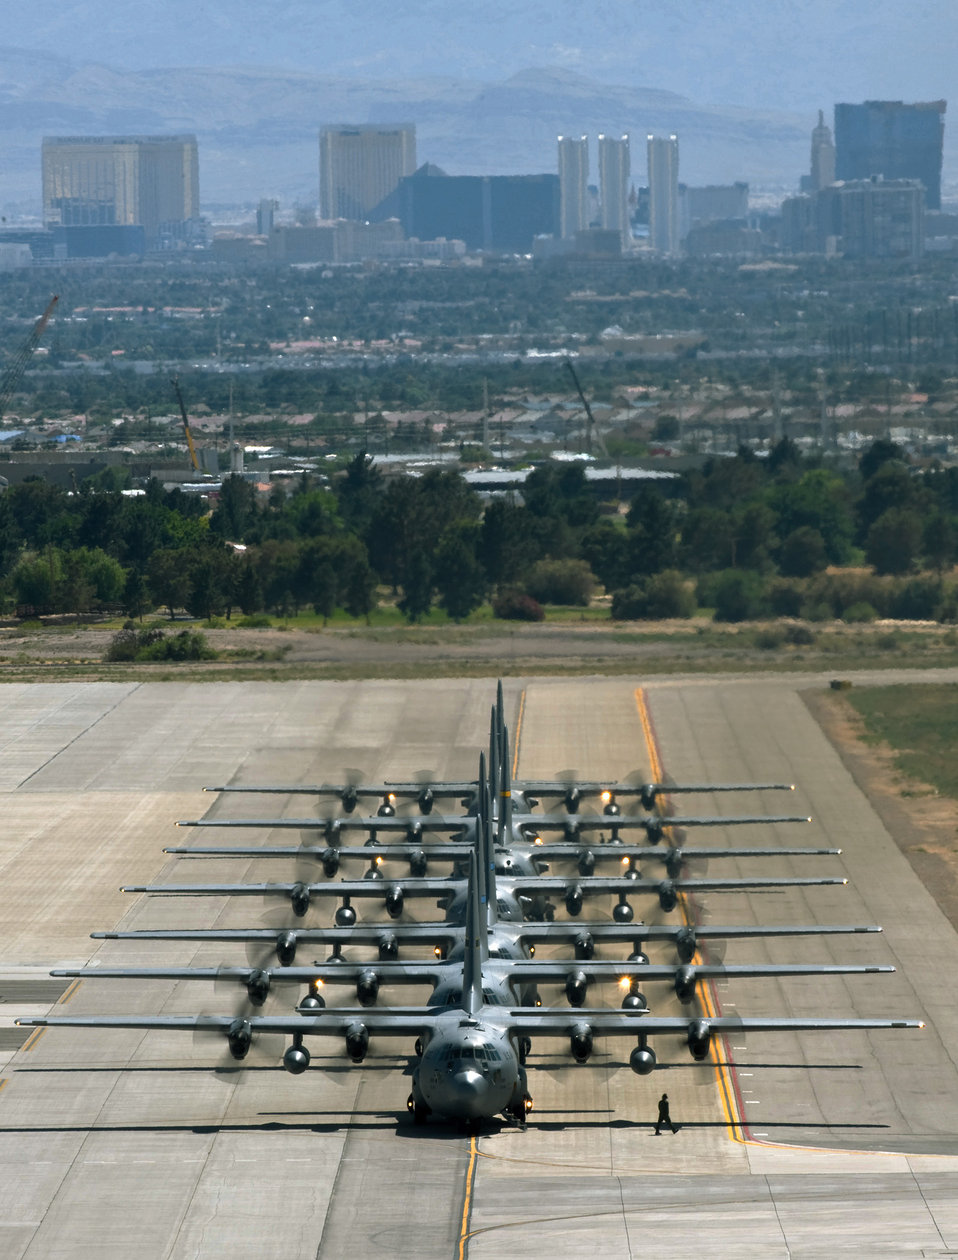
Cleared to depart

Crew chiefs complete their final checks May 19, 2010, before these C-130 Hercules aircraft take off from Nellis Air Force Base, Nev., for a mobility exercise over a nearby training range. The exercise is part of the larger bi-annual U.S. Air Force Weapons School Mobility Air Forces exercise.